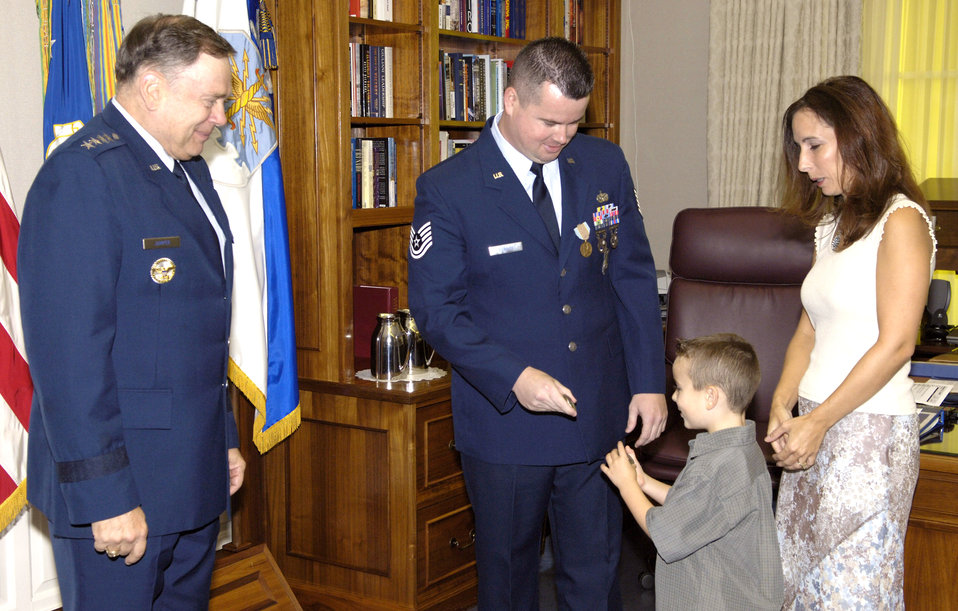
Airman receives medal for water rescue

WASHINGTON -- Air Force Chief of Staff Gen. John P. Jumper (left) and Cheryl Downey look on as Tech. Sgt. Michael Downey II and his son, Joseph, compare coins given to them by the chief of staff. General Jumper presented an Airman's Medal to Sergeant Downy here Aug. 31. Sergeant Downey was awarded the medal for exemplary courage and heroism on Oct. 17, 2003, when he swam to a vehicle that crashed into a canal and freed an 89-year-old driver who was trapped inside a vehicle.